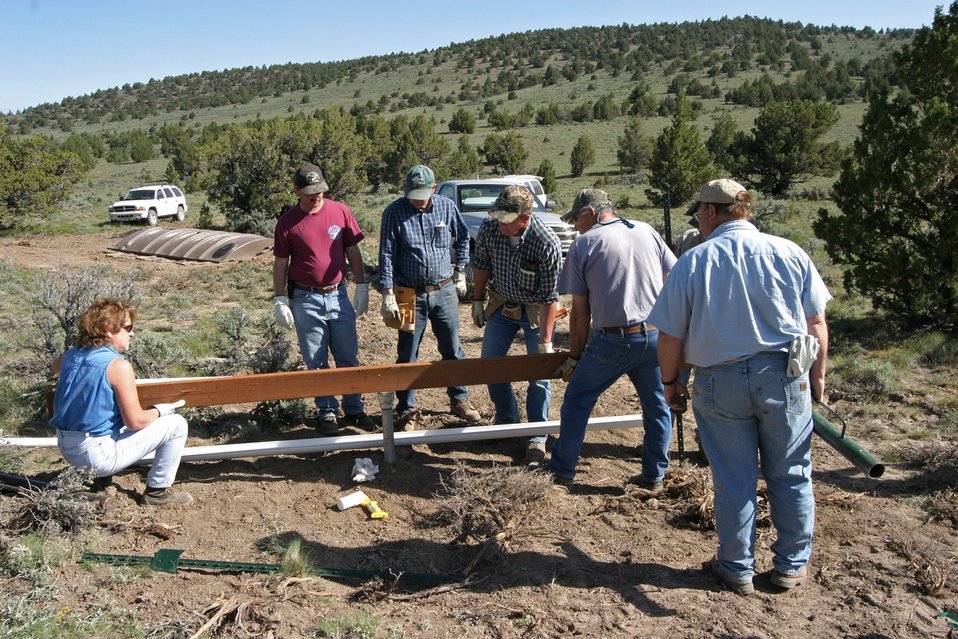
Volunteers help BLM build guzzlers to provide water for wildlife.